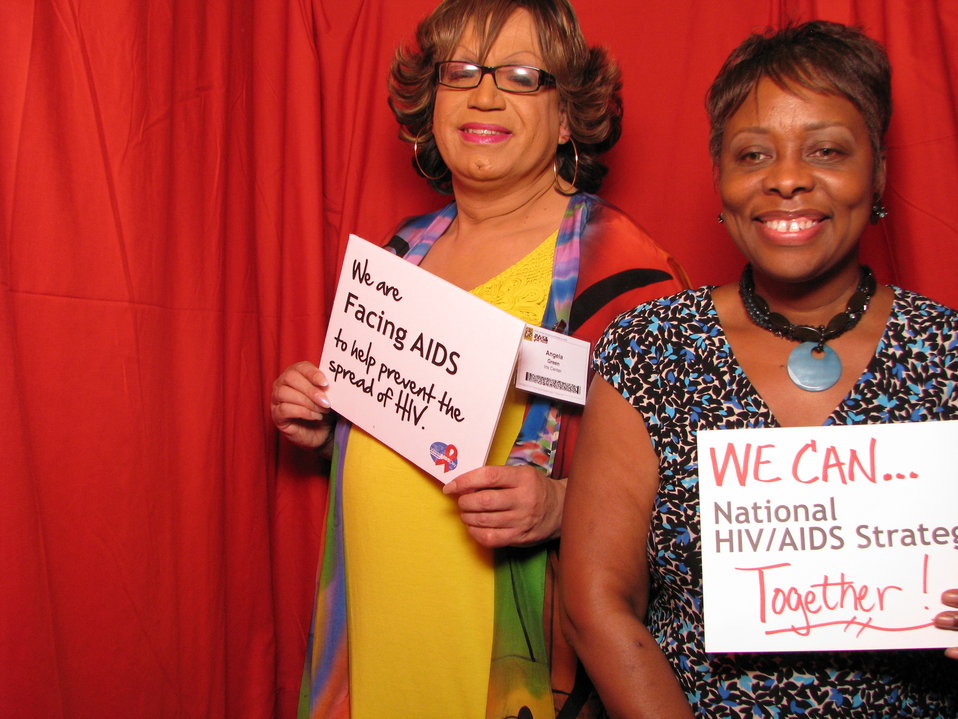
We are FACING AIDS to help prevent the spread of HIV. WE CAN... National HIV/AIDS Strategy together!

From the AIDS.gov photo booth at the U.S. Conference on AIDS, September 2010 (Orlando, FL).